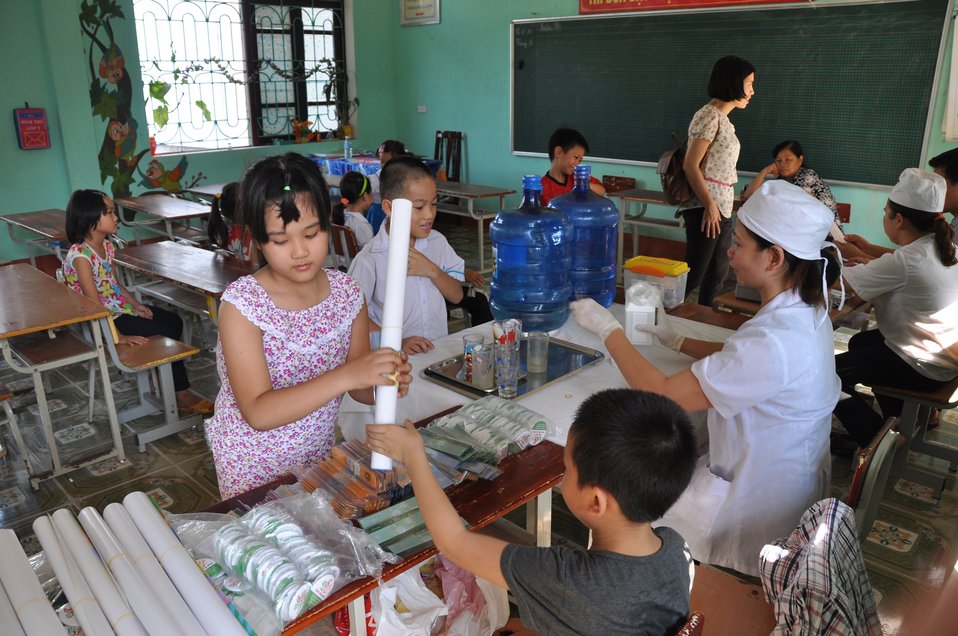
USAID supports deworming education and medication distribution in Bac Giang Province

May 20, 2013